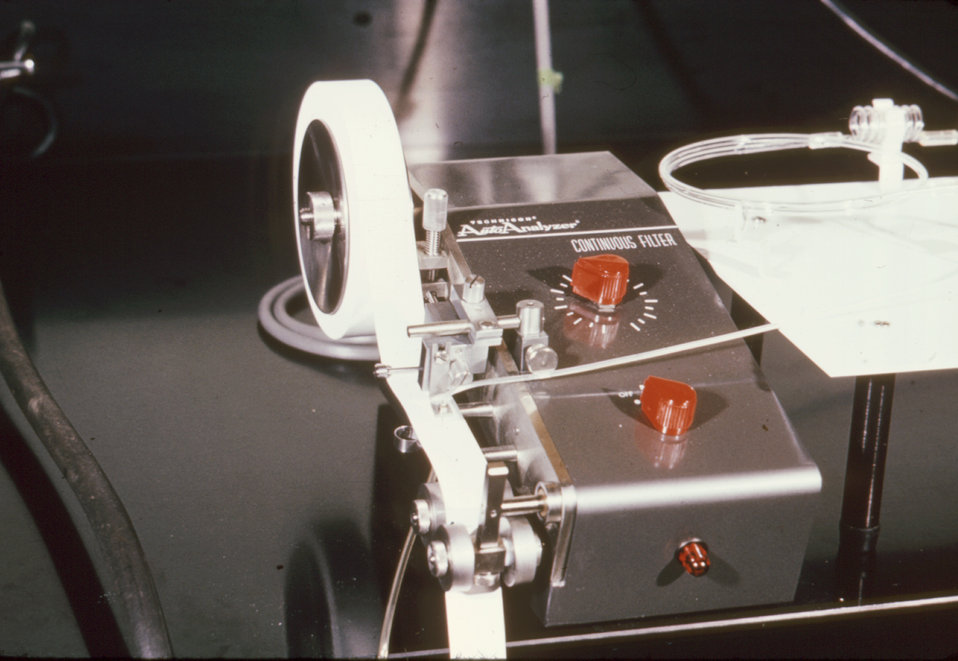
This 1969 photograph depicts the Automated Reagin Test (ART) equipment used in syphilis screening.